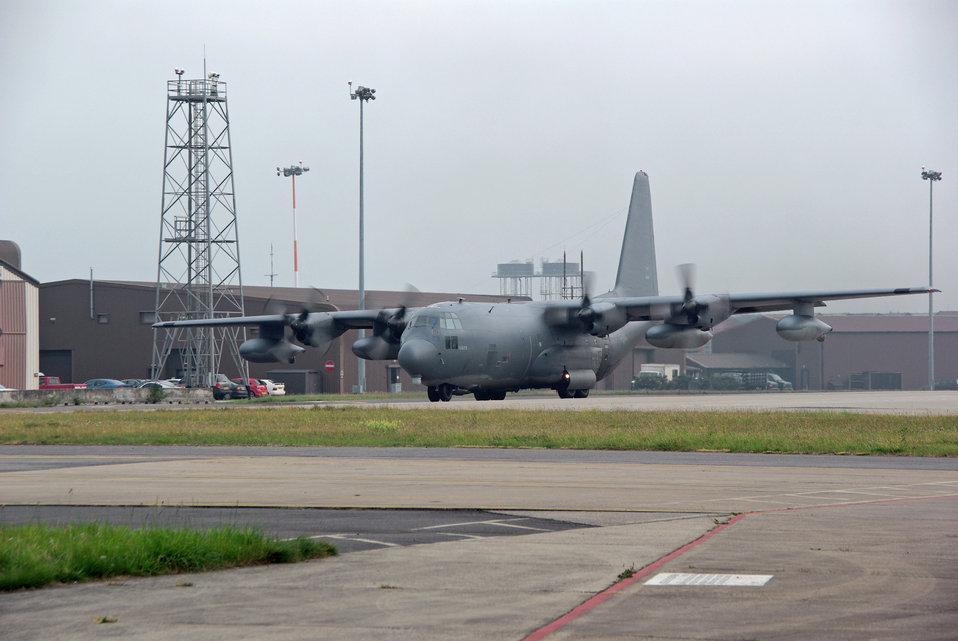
Airmen contribute to rescue effort at sea

An MC-130P Combat Shadow from the 352nd Special Operations Group prepares for takeoff in support of a rescue effort of a crew member onboard a container ship off the coast of Ireland June 26 from Royal Air Force Mildenhall, England. The rescue effort involves coordination between the U.S. Air Force and Royal Air Force units.